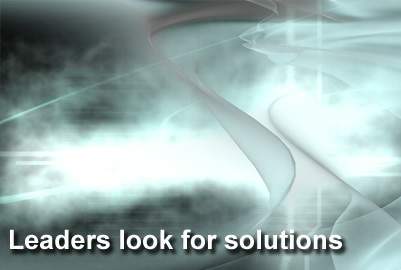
Uncertainty about military suicides frustrates services

This near-unanimous chorus was sounded on Capitol Hill when the second-ranking military officers of each service testified about military mental health before the House Armed Services Committee July 29 in Washington. The most frustrating part about suicide prevention is the uncertainty about what causes troops to take their lives, top military leaders said.